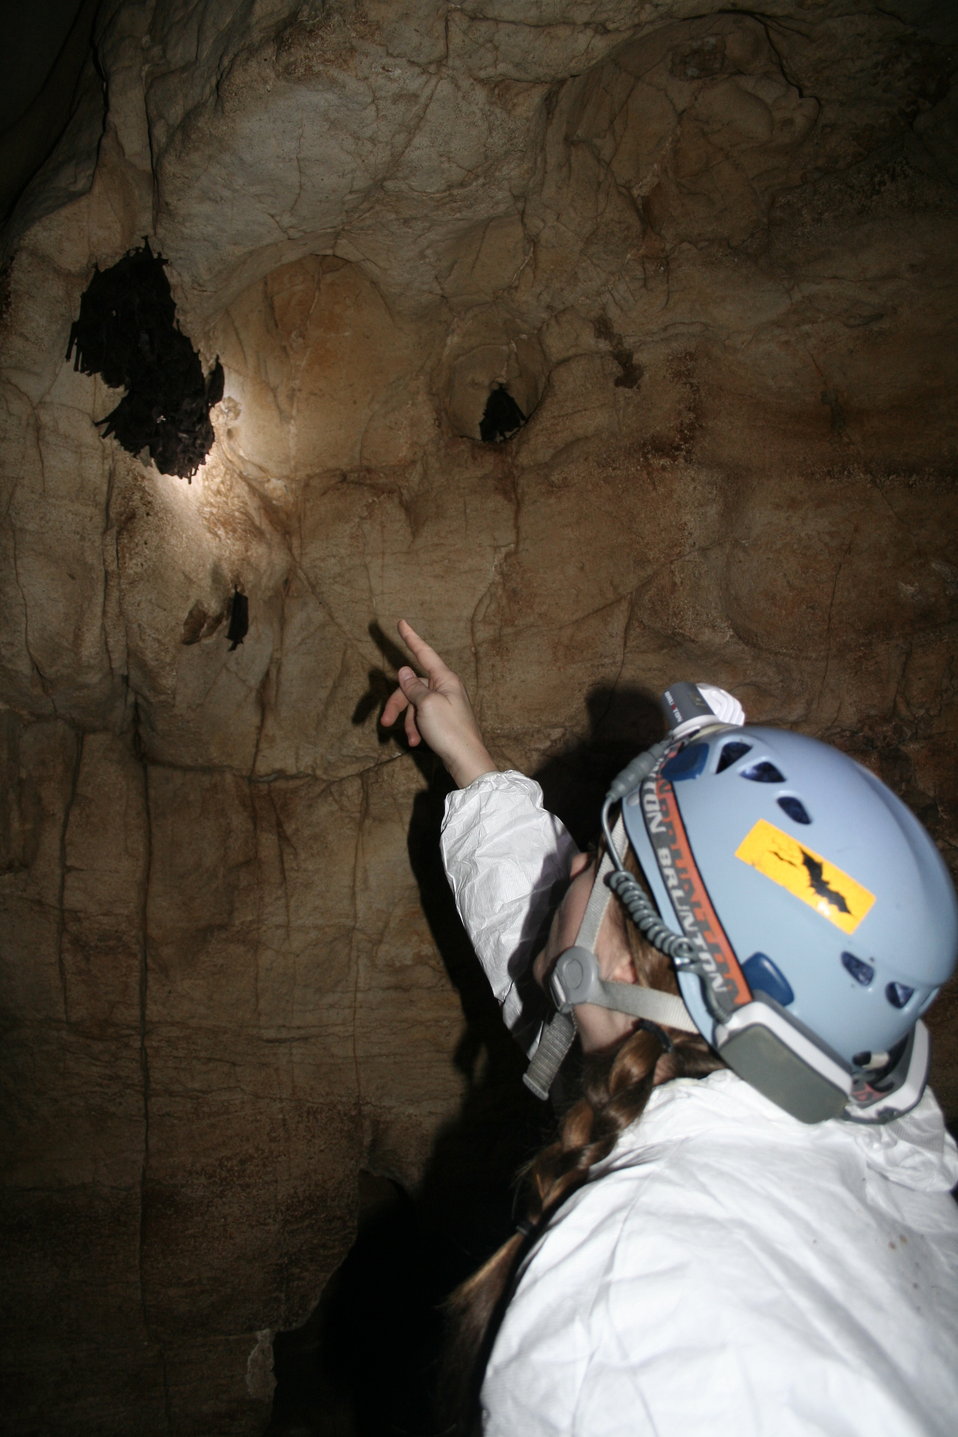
KDFWR bat ecologist counts gray bats

Kentucky Department of Fish and Wildlife Resources bat ecologist counts bats